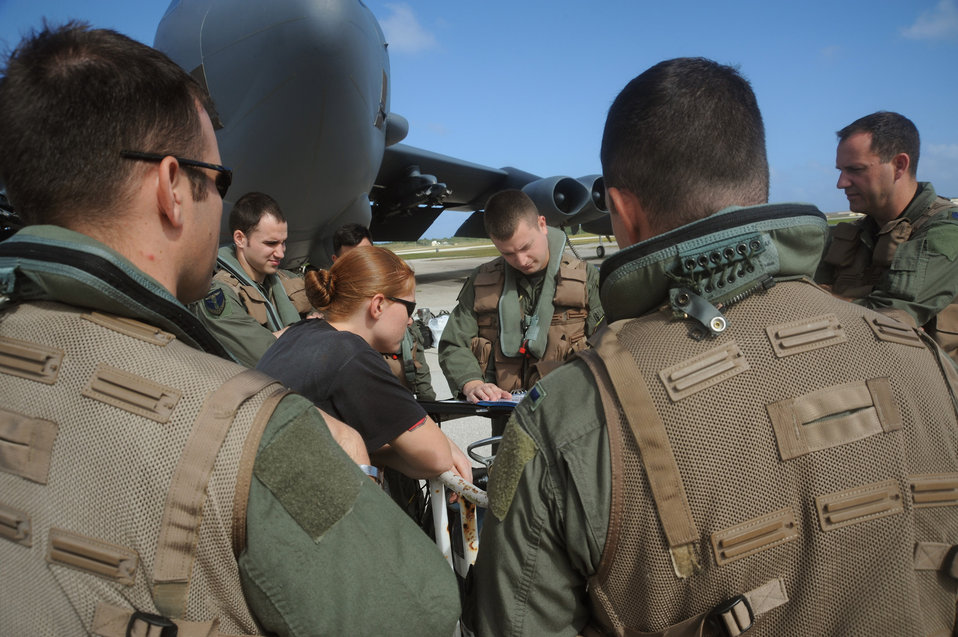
Pilots from the 23rd Expeditionary Bomber Squadron and 36th Expeditionary Aircraft Maintenance Squadron members review aircraft forms Dec. 30 before a B-52 Stratofortress mission. All are deployed to Andersen Air Force Base, Guam from Minot AFB, N.D. The bomber's participation in constant training helps emphasize the U.S. bomber presence, demonstrating U.S. commitment to the Pacific region.